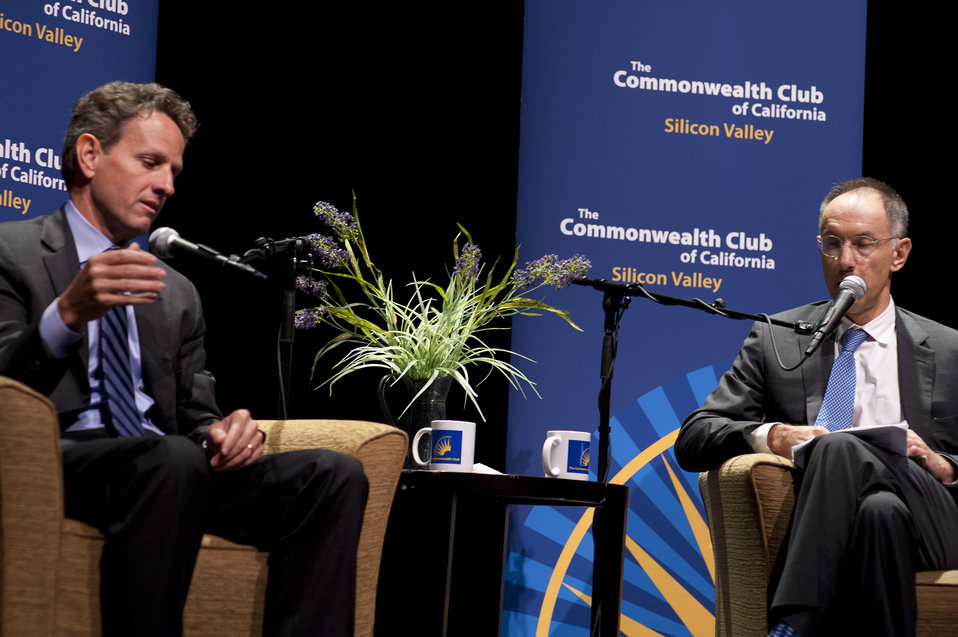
'A Conversation with Secretary Tim Geithner' hosted by the Commonwealth Club, 10/18/10

In brief remarks and a question and answer session moderated by Michael Moritz, Managing Member of Sequoia Capital, Secretary Geithner addressed President Obama’s economic priorities and the challenges still facing our country.